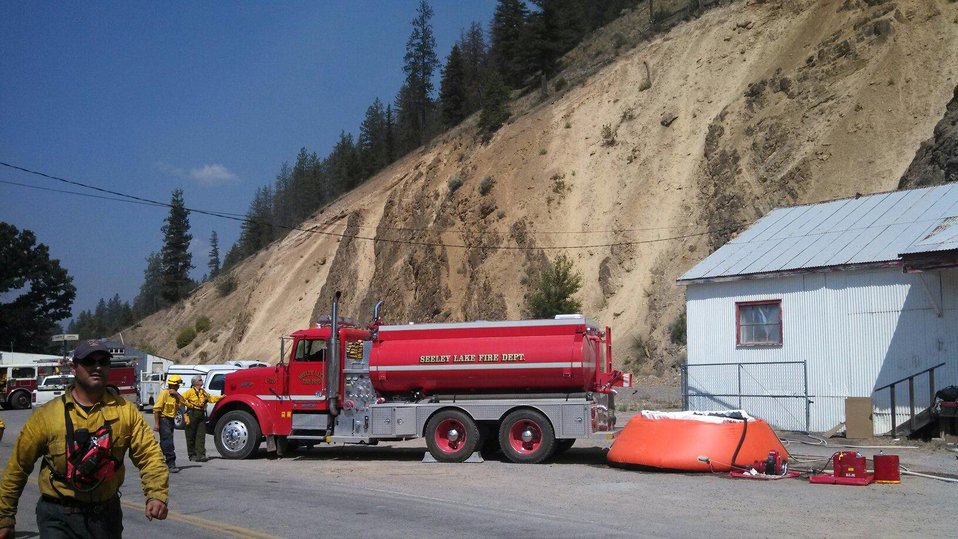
Volunteer Fire Departments assist with structure protection against the West Mullan Fire in the Lolo National Forest, MT. The West Mullan Fire in the Lolo National Forest in Montana near Superior, MT began on Jul. 14, 2013 was due to human interference and has consumed approximately 6, 090 acres. The West Mullan Fire is approximately 45% contained.